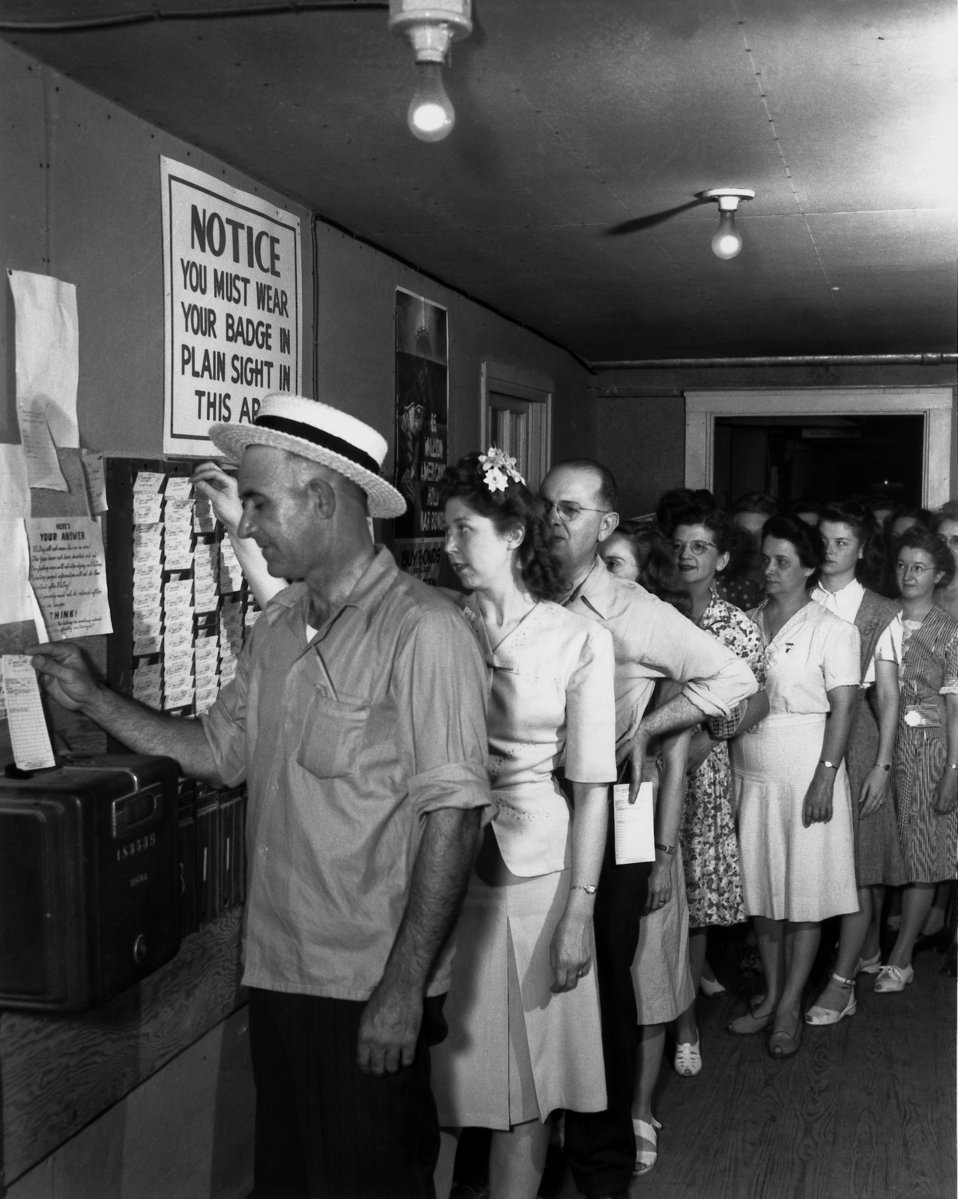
Clock alley-Roane Anderson Co. Oak Ridge

pro 763-2 DOE photo by Ed Westcott 6/23/45
Oak Ridge Tennessee